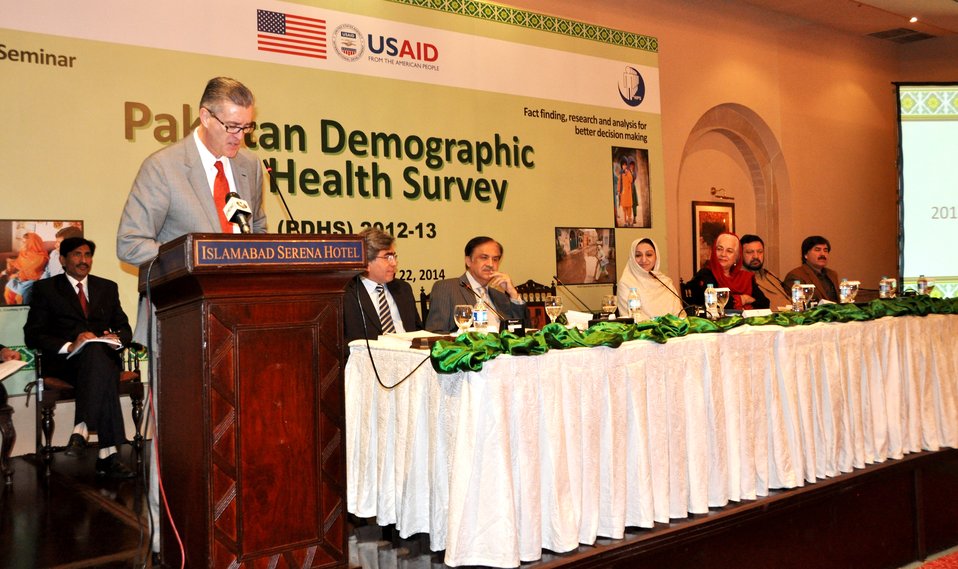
The Pakistan Demographic and Health Survey 2012-13 survey was jointly implemented by the Government of Pakistan and the United States Government through the United States Agency for International Development (USAID).

The Pakistan Demographic and Health Survey (PDHS) was released today at a ceremony in Islamabad that was attended by Saira Afzal Tarar, State Minister for National Health Services, Regulation and Coordination, and Richard G. Olson, U.S. Ambassador to Pakistan. The PDHS 2012-13 survey was jointly implemented by the Government of Pakistan’s Ministry of National Health Services, Regulation and Coordination and the United States Government through the United States Agency for International Development (USAID).